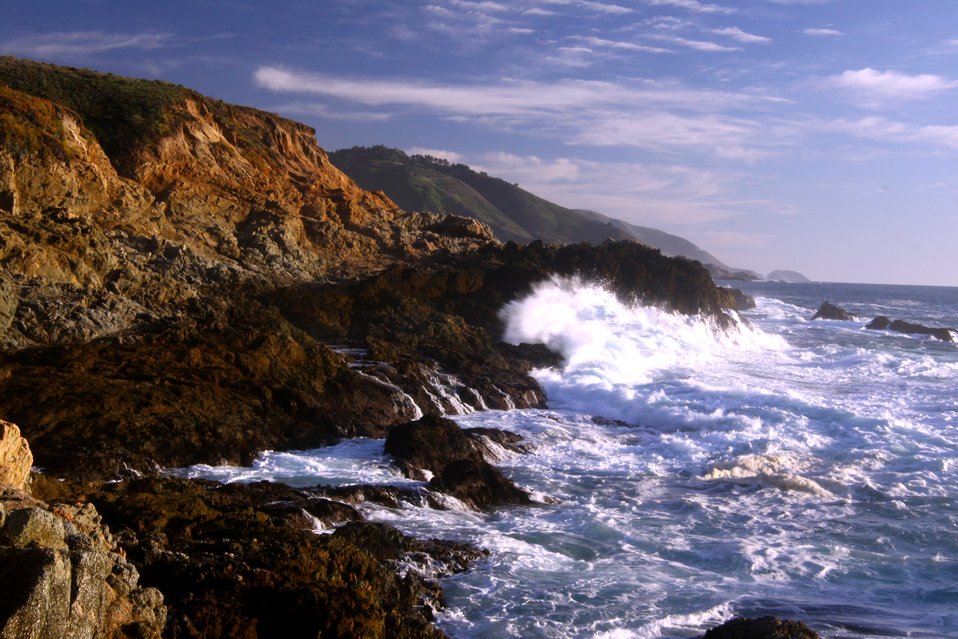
A wave breaking against the rocks of the Granite Canyon area along the Big Sur coastline. Point Sur is seen in the distance.